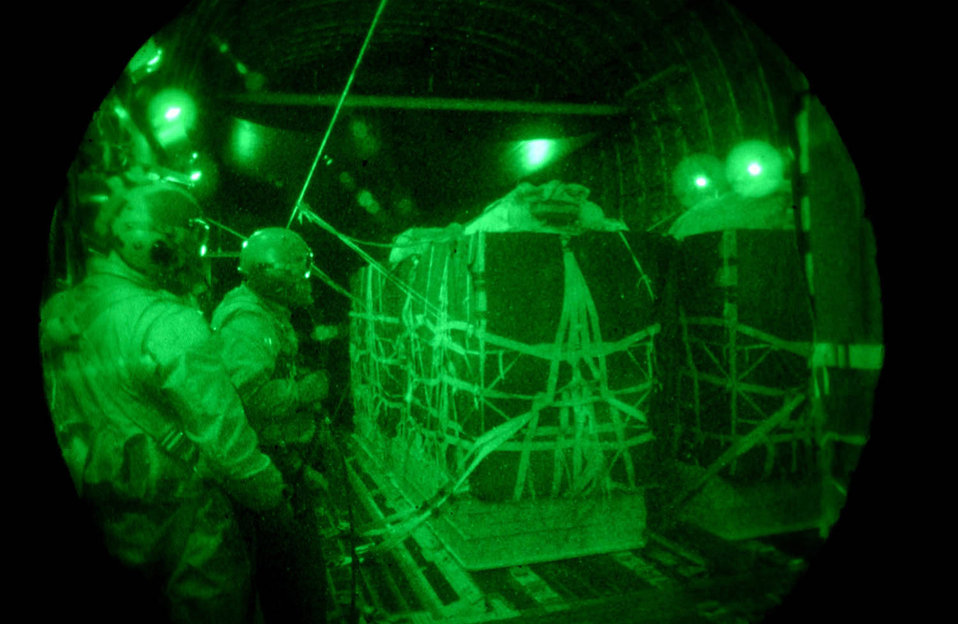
HALO drop

OPERATION ENDURING FREEDOM -– Master Sgt. John Buzby (left), a physiological technician from Kadena Air Base, Japan, and Master Sgt. Ron Pierce, a C-17A Globemaster III loadmaster from the 7th Airlift Squadron at McChord Air Force Base, Wash., prepare for the release of containers during an High Altitude Low Opening (HALO) air drop over northern Afghanistan on Dec. 15. Two other C-17s dropped 17,000 humanitarian daily rations, 72 containers of wheat and blankets, bringing the total number of HDRs delivered to more than 2.5 million, Dec. 16.